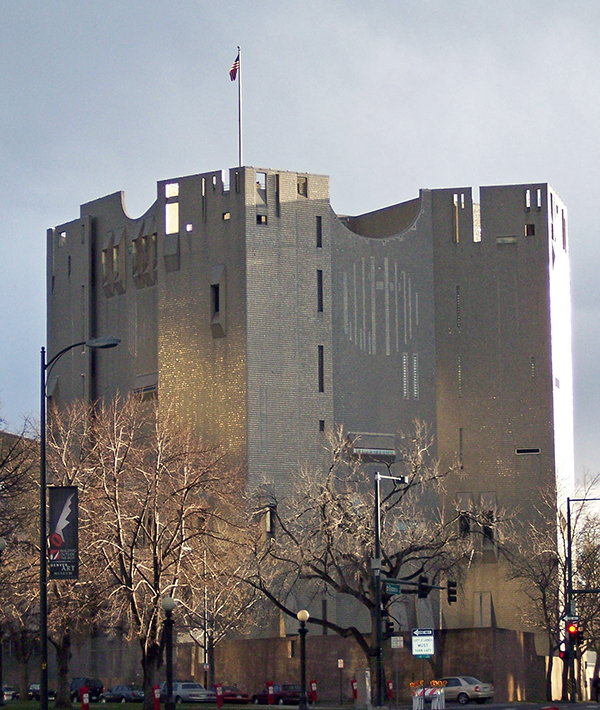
Picture of the en:Denver Art Museum by en:User:Tijuana Brass. PD.